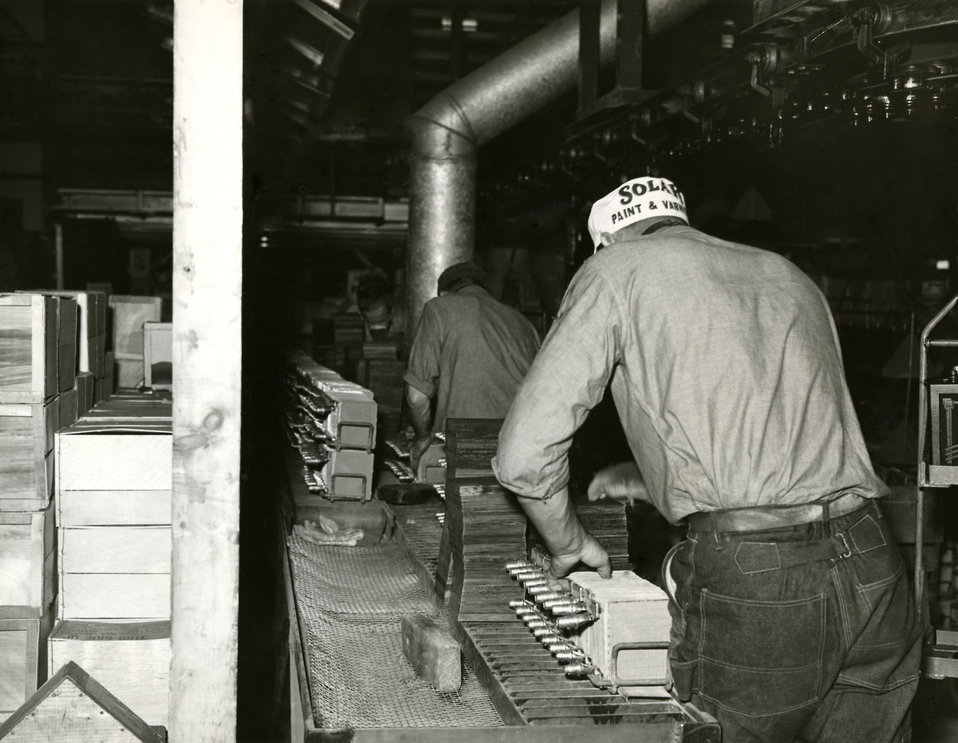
Published in the 'Public Health Bulletin', No. 262, 1941, this historic image, which was provided by the Center for Disease Control's (CDC), National Institute for Occupational Safety and Health (NIOSH) depicted a battery factory assembly line worker in the process of inserting separators in storage batteries. As a device containing both lead, a toxic heavy metal, and acid, in the form of sulfuric acid, batteries are potentially dangerous, both in their finished state, as well as during their manufacture. Precautions need be taken when building a battery, including the use of goggles, gloves, and filtered breathing devices. None of these accessories were being implemented by these workers.